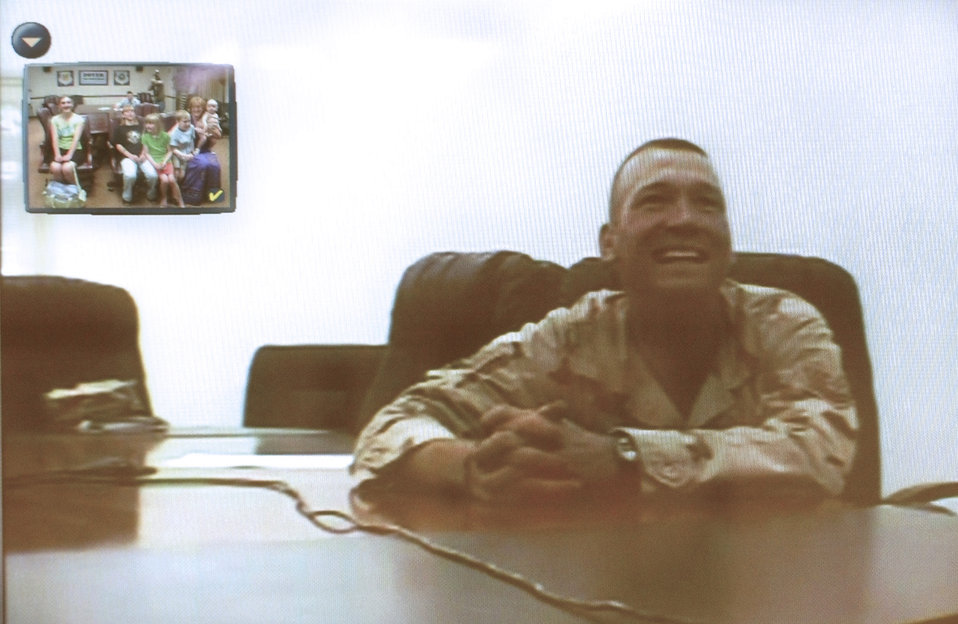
Deployed dads get 'live' visits from families

DOVER AIR FORCE BASE, Del. -- Pictured on a television screen, Tech. Sgt. Bill Vass speaks with his wife and five children (upper left) via video teleconference June 15 from Balad Air Base, Iraq. Sergeant Vass and five other deployed Airmen from here were given 15-minute live video visits from their families as an early Father's Day surprise.